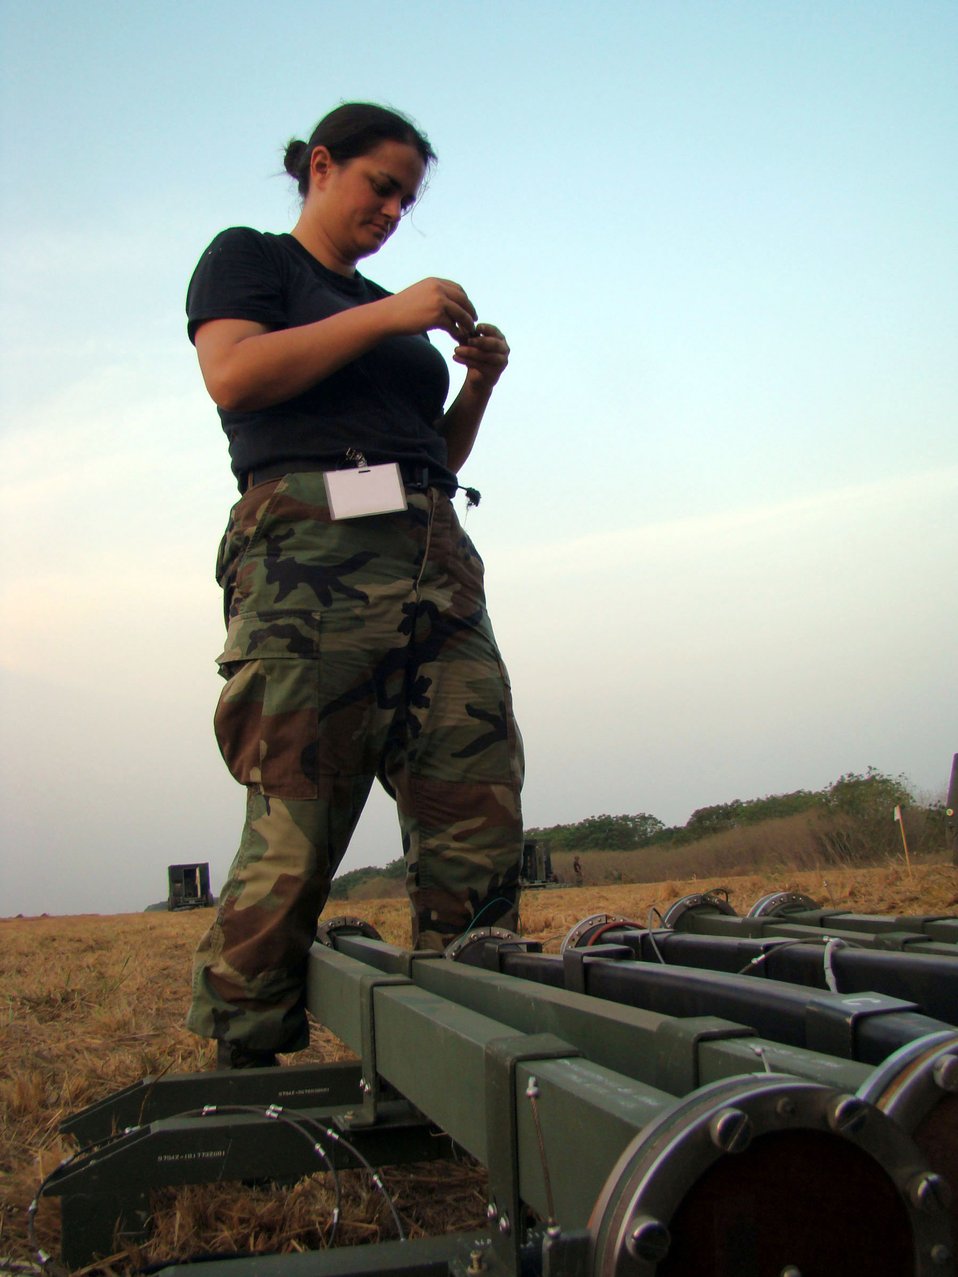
Multiservice team provides presidential support in Africa

Staff Sgt. Zoe Didier-Purdie inspects a waveguide cover as she and her teammates set up communications equipment Feb. 14 in Accra, Ghana. The Airmen, members of a joint military task force, are providing communications support for President George Bush's visit to the African nation. Sergeant Didier-Purdie is an electronic protection technician from the 606th Air Control Squadron at Spangdahlem Air Base, Germany.